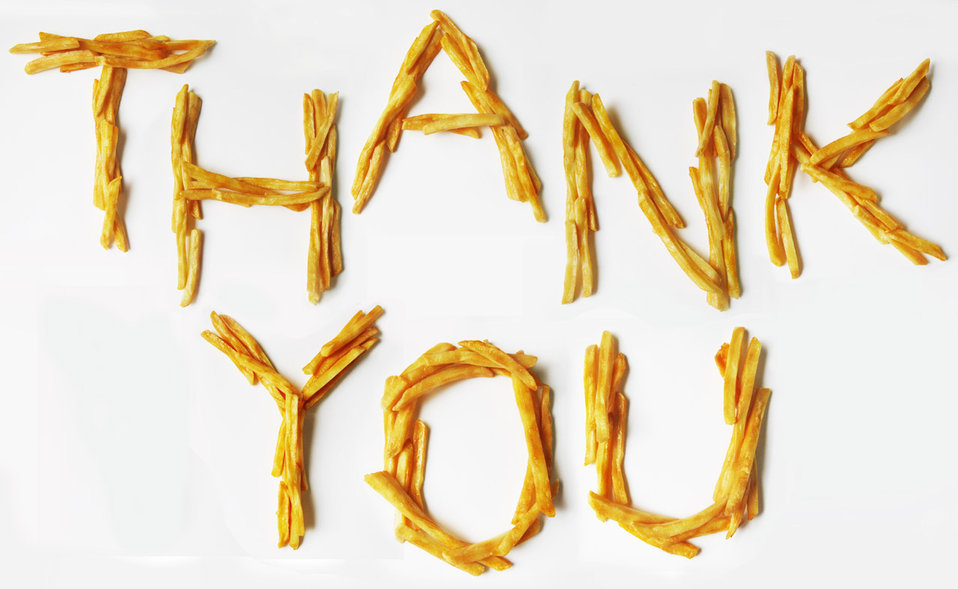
Thank you! (french fries)

French fries.